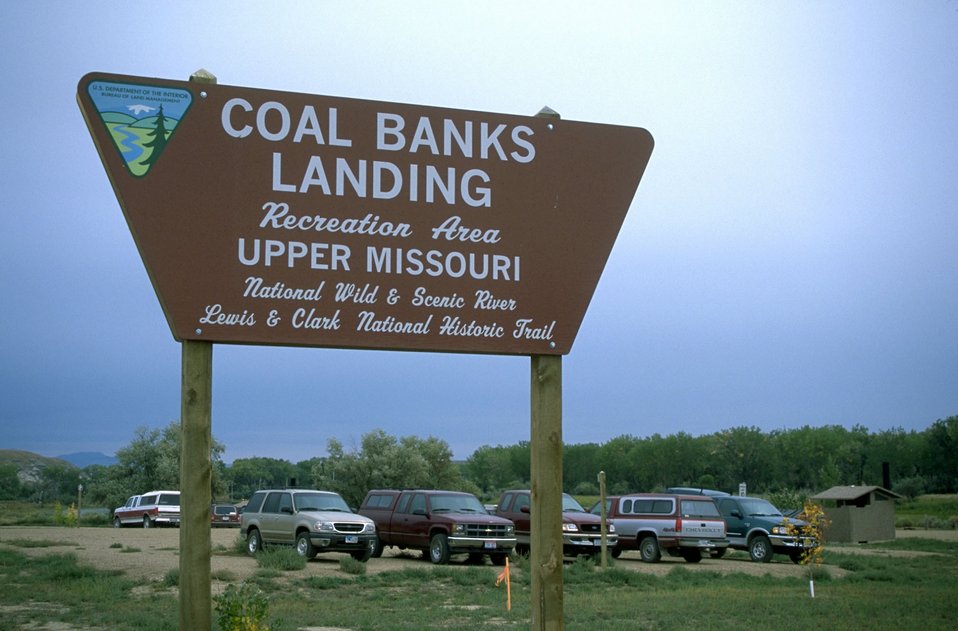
Coal Banks Landing sign near Upper Missouri River